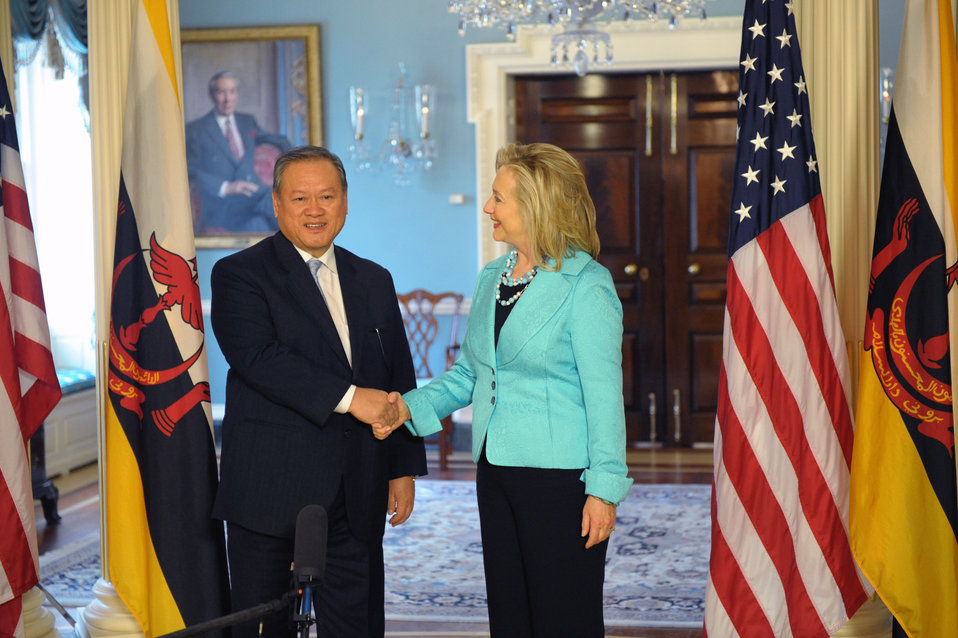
Secretary Clinton Meets With Brunei Darussalam Foreign Affairs and Trade Minister and II Pehin Dato Lim Jock Seng

U.S. Secretary of State Hillary Rodham Clinton meets with Brunei Darussalam Foreign Affairs and Trade Minister II Pehin Dato Lim Jock Seng, at the U.S. Department of State in Washington, D.C., on August 5, 2011.